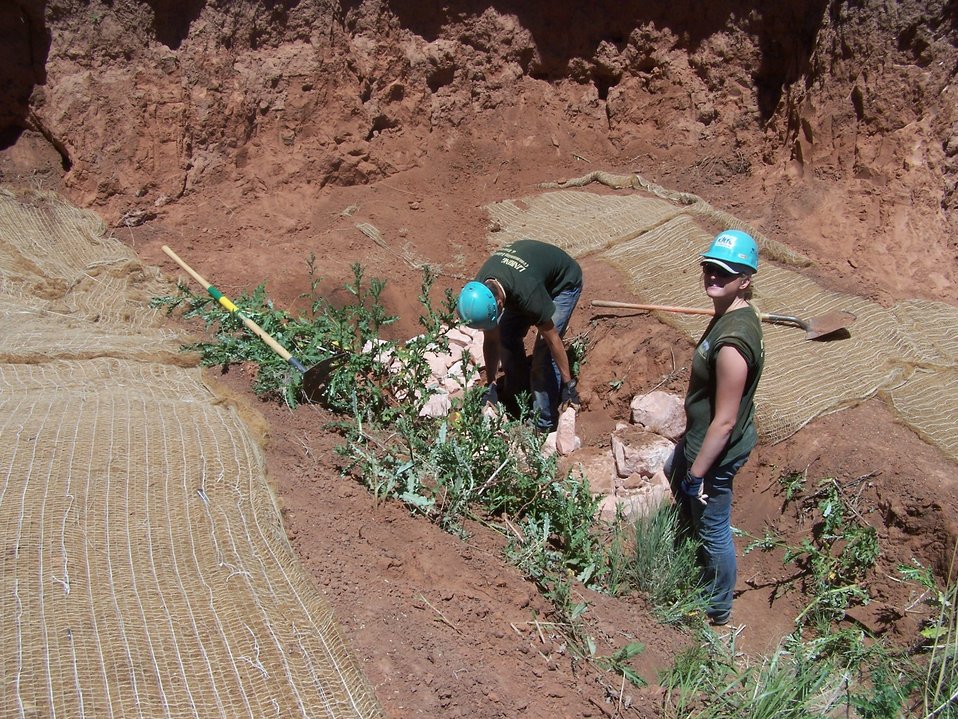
Preventing Erosion

This Region 6 Partners for Fish and Wildlife project was completed on private land located in Colorado. American Reinvestment and Recovery Act funds were used to enhance habitat for Federal Trust Species and stop a major erosion issue impacting the watershed.